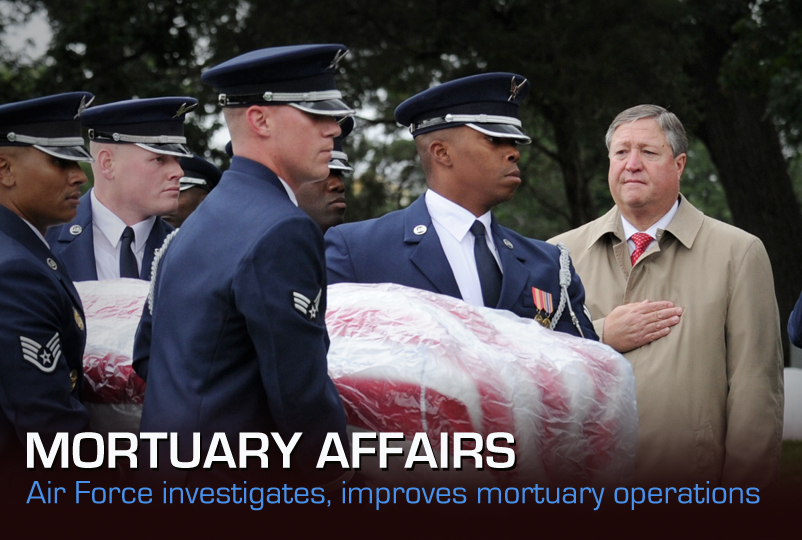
Mortuary Affairs